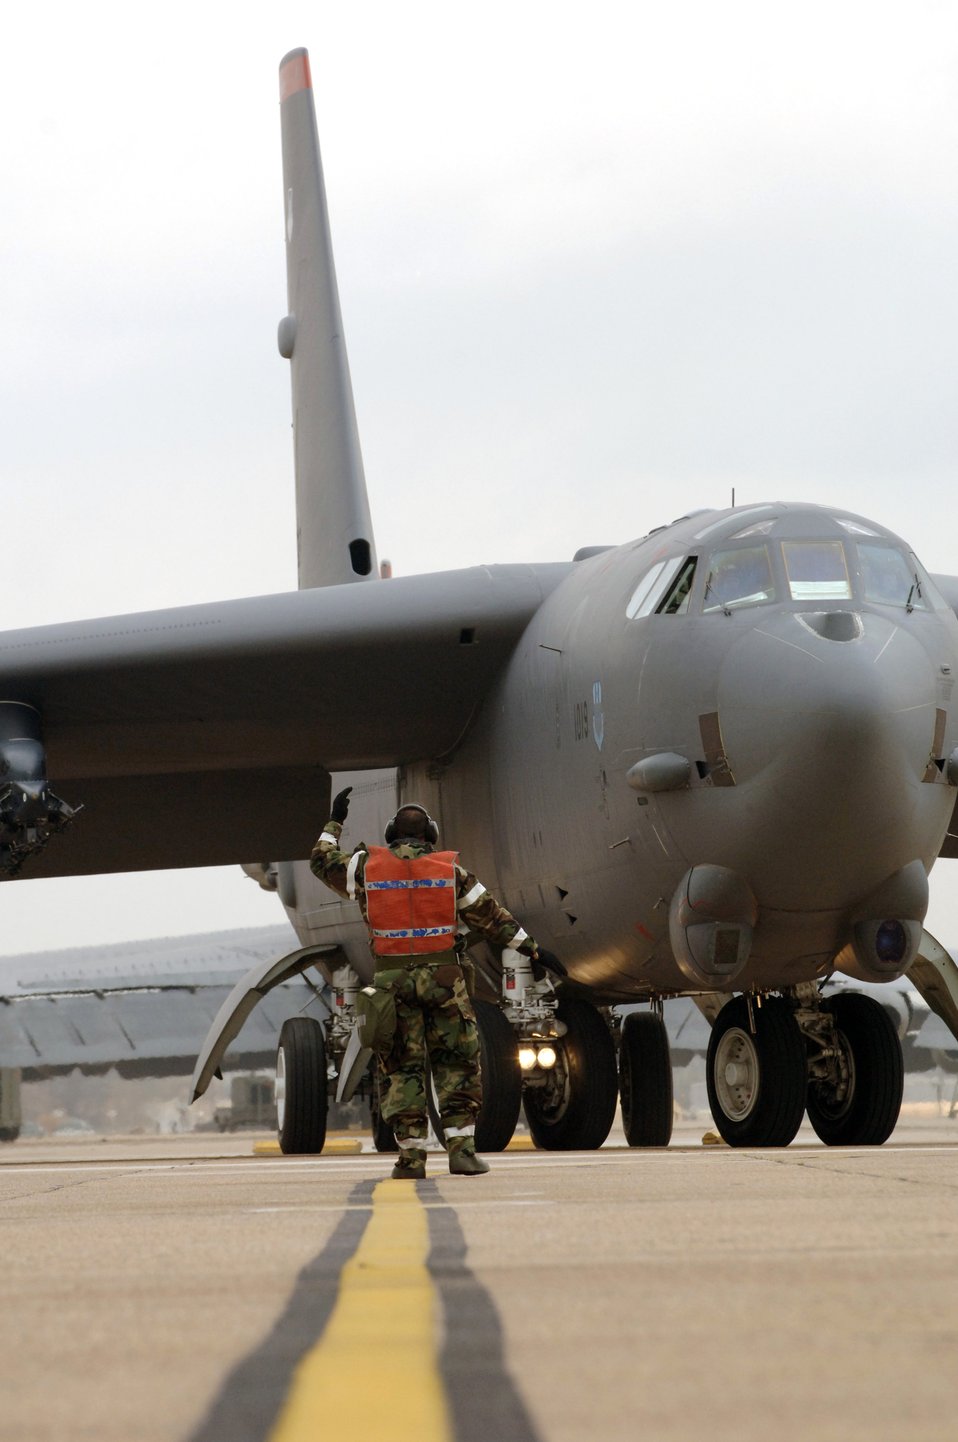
CORE comes to a close

A B-52 Stratofortress taxis out from its parking location Wednesday, March 8, 2006, as flying operations come to a close for the conventional operational readiness exercise, or CORE, at Barksdale Air Force Base, La. The exercise simulated the deployment of aviation and combat support assets to a forward operating location. Units from the 2nd Bomb Wing and the 917th Wing participated.